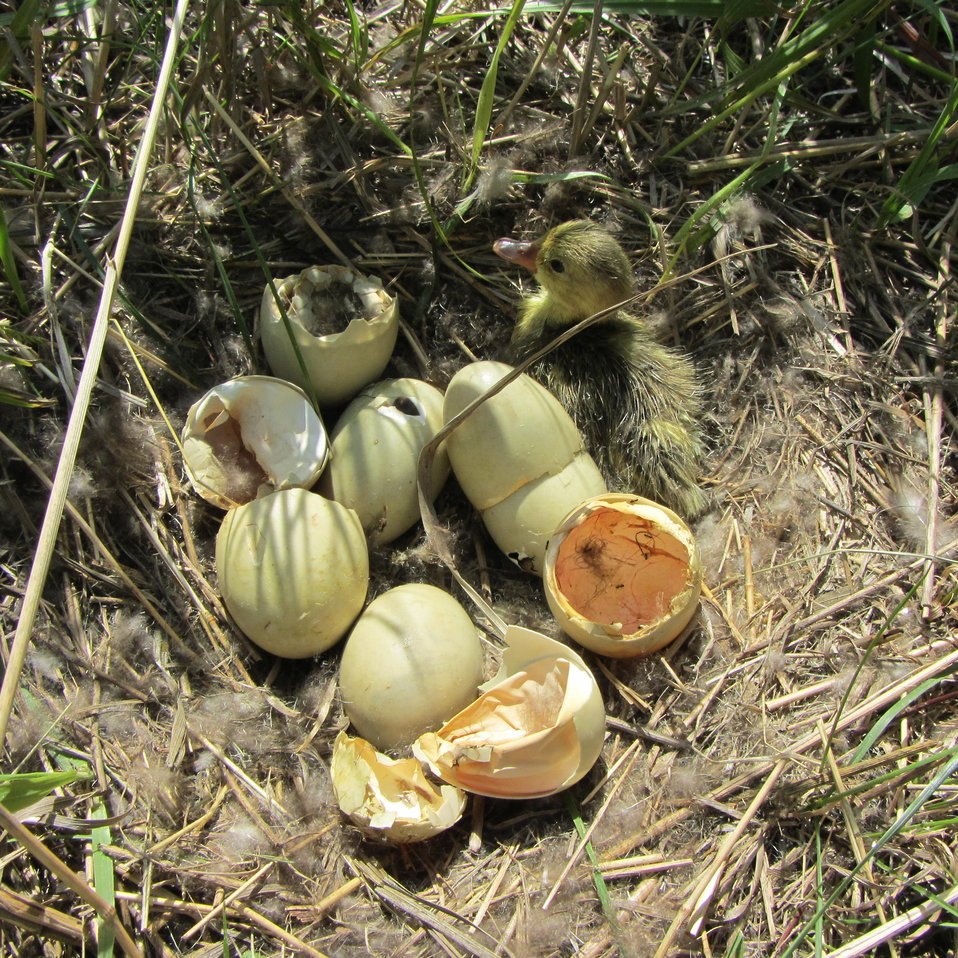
Redhead Duckling and Hatched Eggs

Jackie Jacobson/USFWS